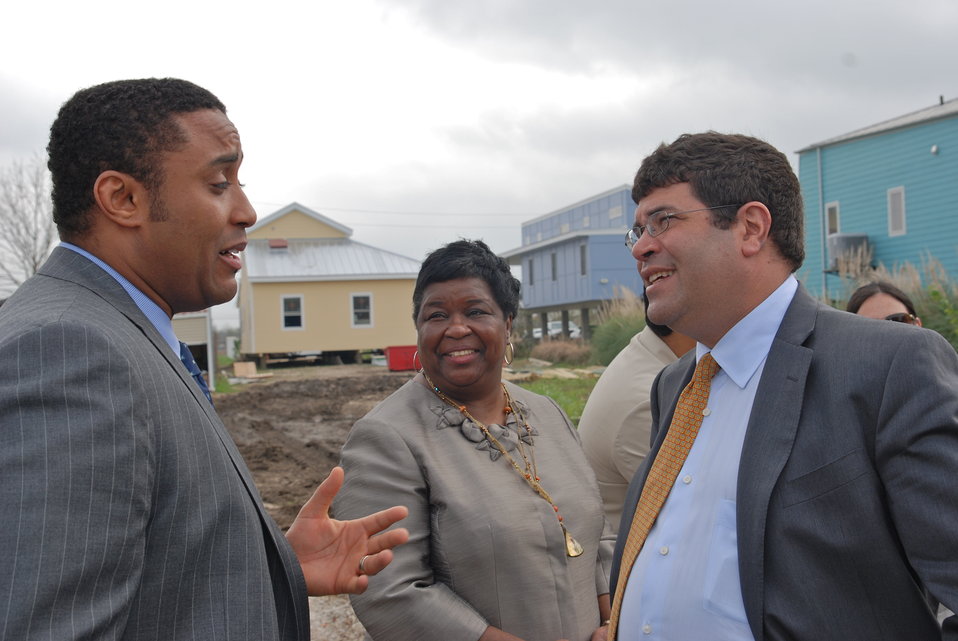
Deputy Secretary Wolin's Trip to New Orleans

In the Lower 9th Ward – where more than 4,000 homes were destroyed by Hurricane Katrina – Deputy Treasury Secretary Neal Wolin (right) saw first-hand how New Markets Tax Credits are helping displaced families return to their neighborhoods. Thanks in part to $5 million in New Markets Tax Credits, the Make It Right organization is building at least 150 affordable, flood-resistant, and energy efficient houses for families who lost their homes in the storm. Make it Right Product Coordinator Cesar Rodriguez lead CDFI Fund Director Donna Gambrell and Deputy Treasury Secretary Neal Wolin on the tour.